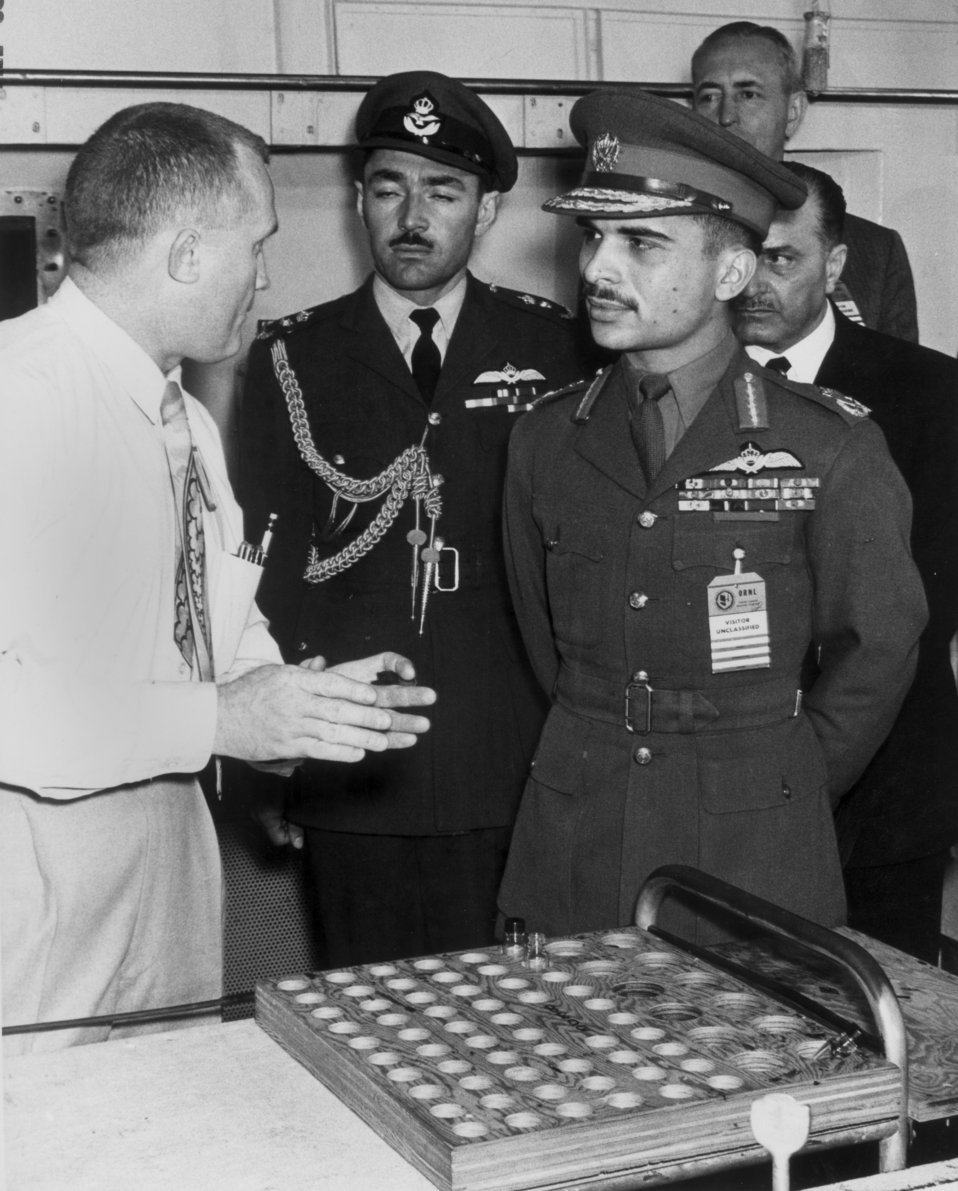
King Hussein of Jordan Tour at Oak Ridge National Lab.

59-0239-06 DOE photo Ed Westcott

King Hussein of Jordan Tour at Oak Ridge National Lab. Oak Ridge Tennessee 3-31-1959